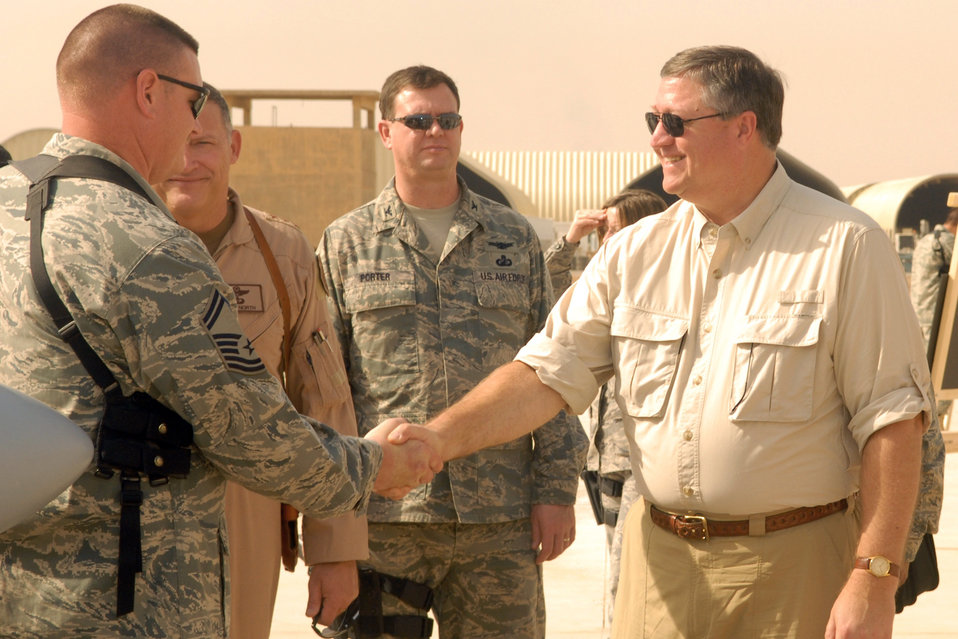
SECAF visits Kirkuk

Senior Master Sgt. Gary Meacham, the 52nd Expeditionary Flying Training Squadron aerospace maintenance superintendent advisor at Kirkuk Regional Air Base, Iraq, greets Secretary of the Air Force Michael Donley during his visit Oct. 14. The 52d EFTS operates fixed and rotary wing aircraft to provide ground and flight training for Iraqi pilot candidates, instructor pilots and maintenance officers in a combat environment. The secretary toured various facilities and spoke to Airmen about his vision for the overall mission within the Southwest Asia AOR and the future of the Air Force. Sergeant Meacham is deployed from Hill Air Force Base, Utah.